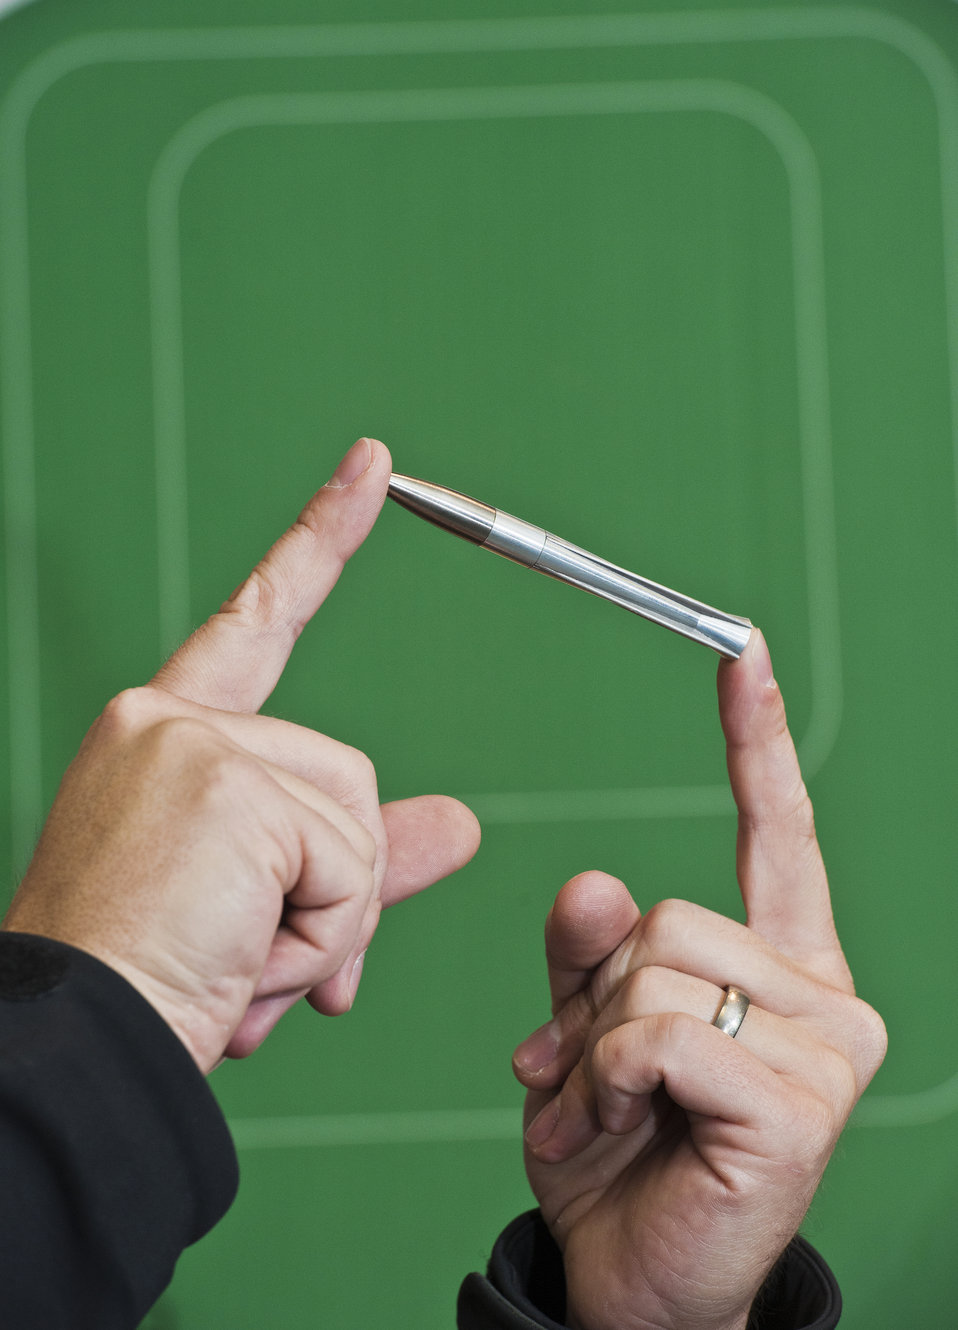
Shown is Sandia National Laboratory's self-guided bullet.

The four-inch-long bullet has actuators that steer tiny fins that guide it to its target.